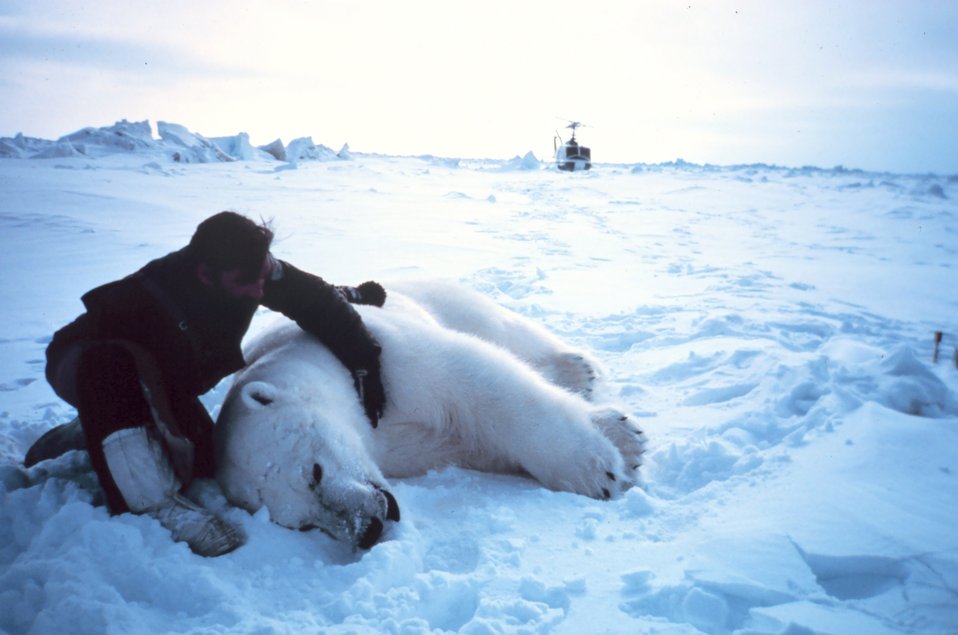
Helicopter pilot Budd Christman with large sedated male polar bear - Ursus maritimus. Bears were measured and tagged for future study. Outer Continental Shelf Environmental Assessment Program (OCSEAP) studies.